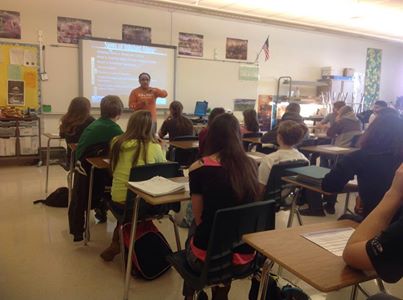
Drug facts week for ESCAPE Project in Wyoming